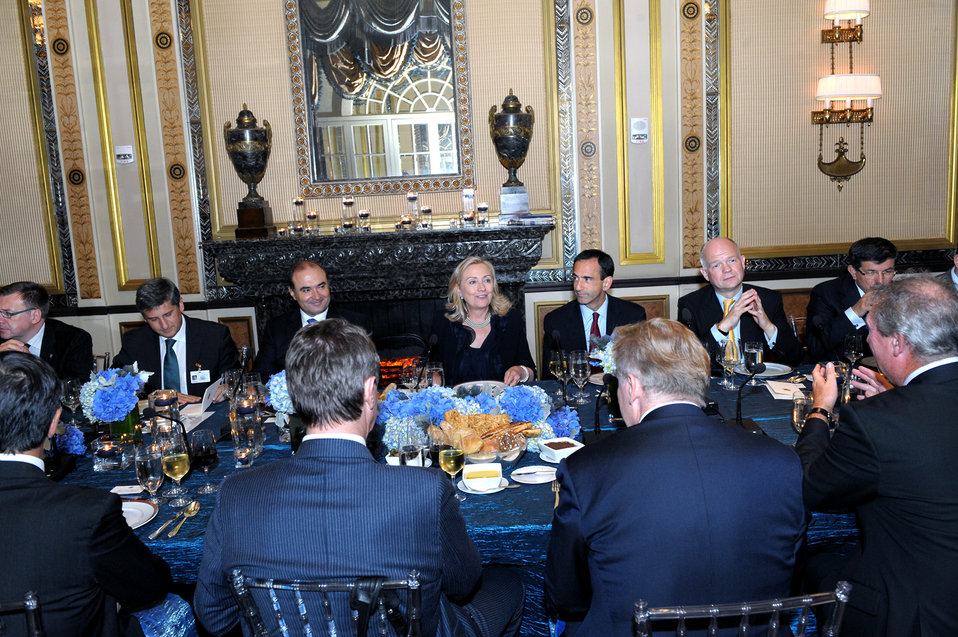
Secretary Clinton Hosts a Trans-Atlantic Dinner for Foreign Ministers From EU and NATO Countries

U.S. Secretary of State Hillary Rodham Clinton hosts a Trans-Atlantic Dinner for Foreign Ministers from EU and NATO countries, at the Waldorf-Astoria in New York, New York, on September 22, 2011.